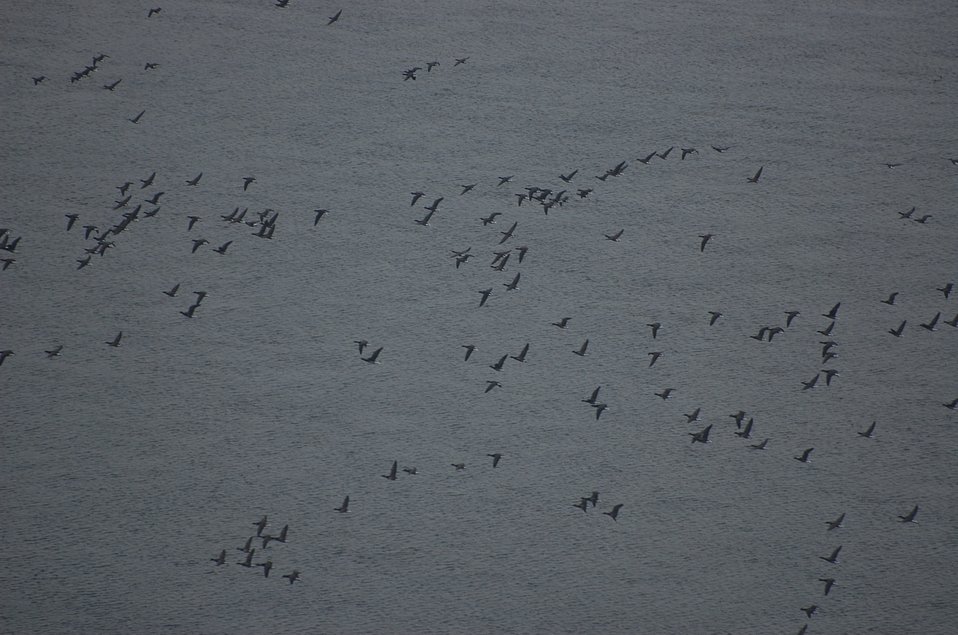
Brant at Izembek Lagoon

Izembek National Wildlife Refuge